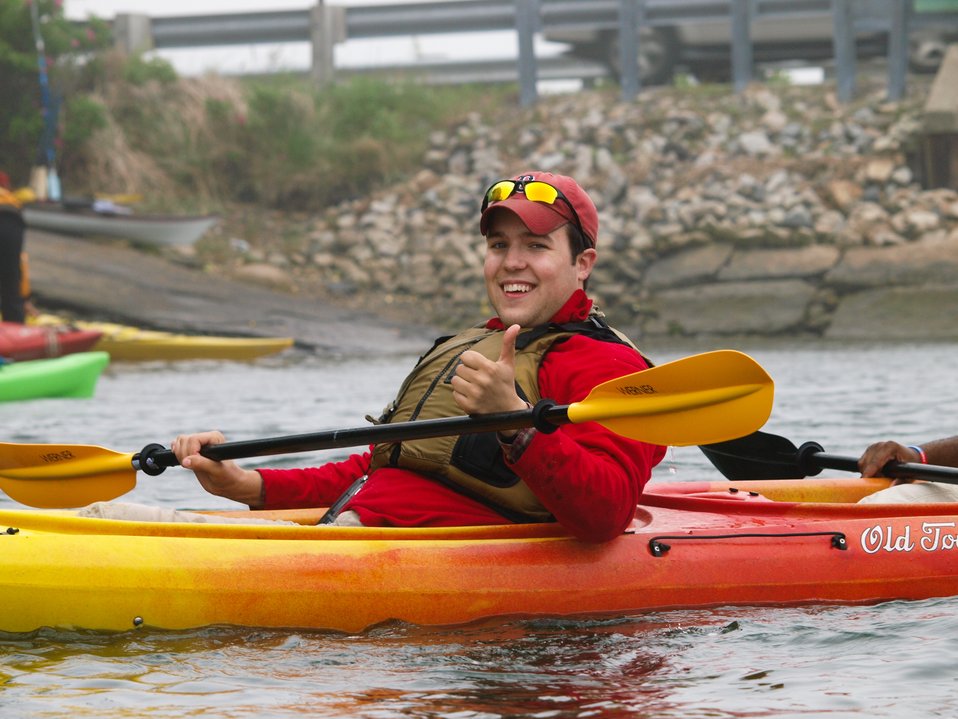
EA Intern Jamie Weliver - 2010 Annual CIP Kayaking trip

USFWS External Affairs Intern Jamie Weliver on the CIP program’s annual coastal kayaking trip.